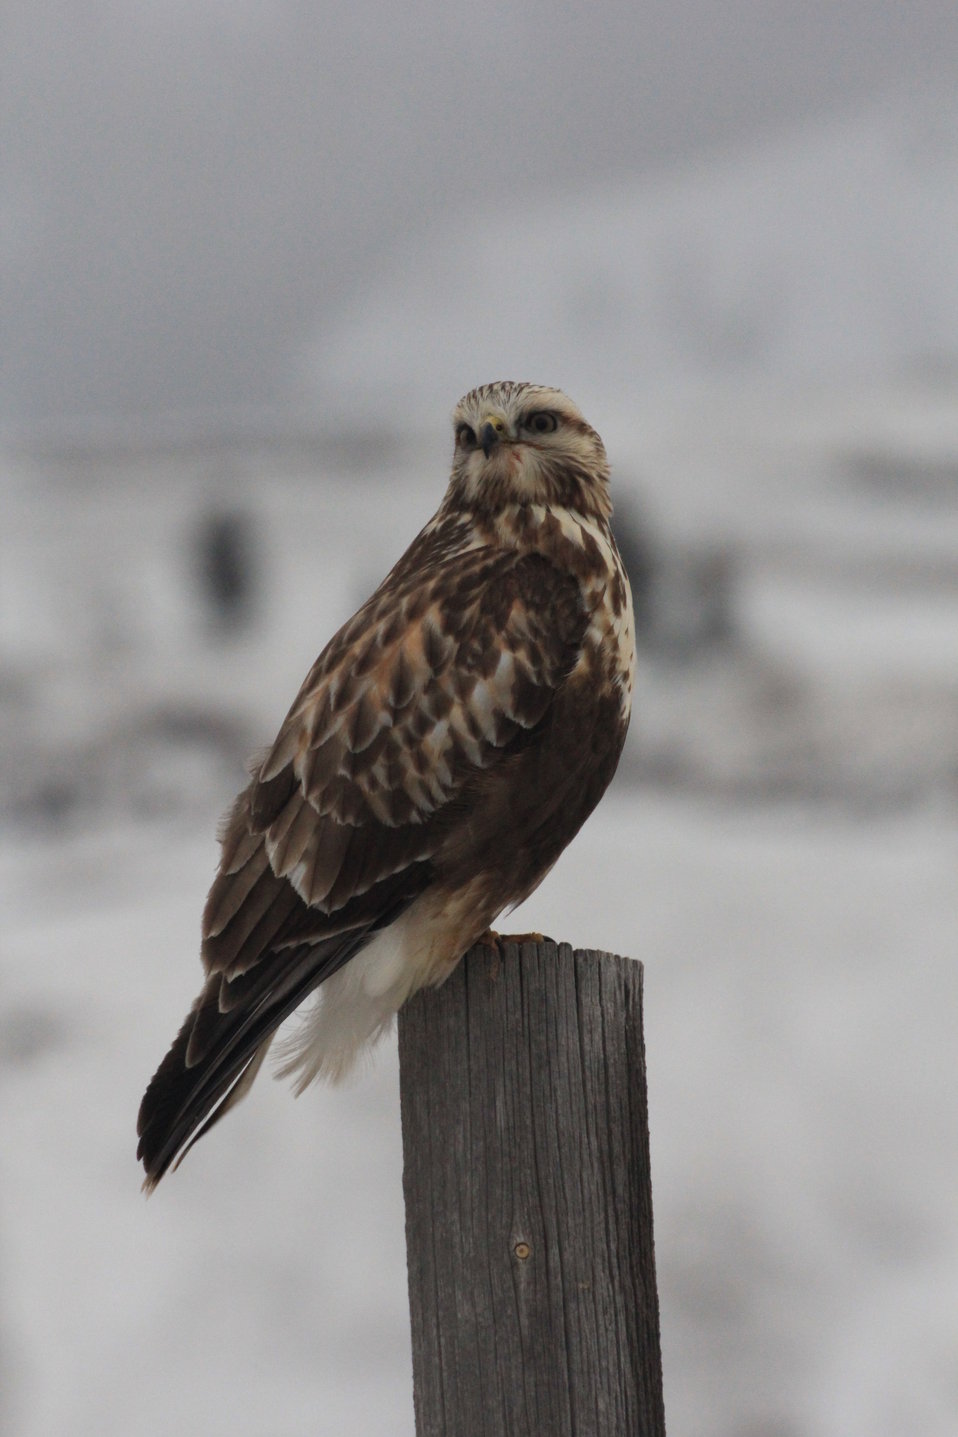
Keeping Watch

A rough-legged hawk keeps an eye on its surroundings from a post on the National Elk Refuge.

Credit: USFWS / Ann Hough, National Elk Refuge volunteer